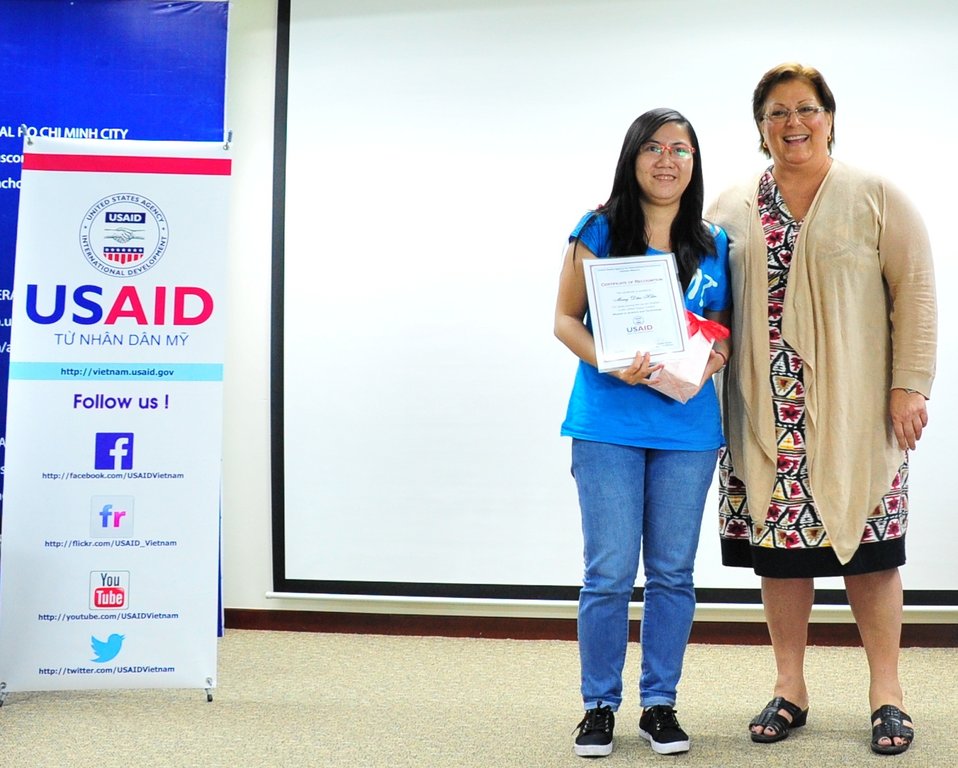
Women in Science and Technology Essay Contest Award Ceremony

U.S. Embassy Deputy Chief of Mission Claire Pierangelo presents a certificate of recognition to Ms. Mang Dieu Hien, a student from Ho Chi Minh City Medical and Pharmacy University, who is among top 10 finalists in the USAID Women in Science and Technology Essay contest, on May 16, 2013.